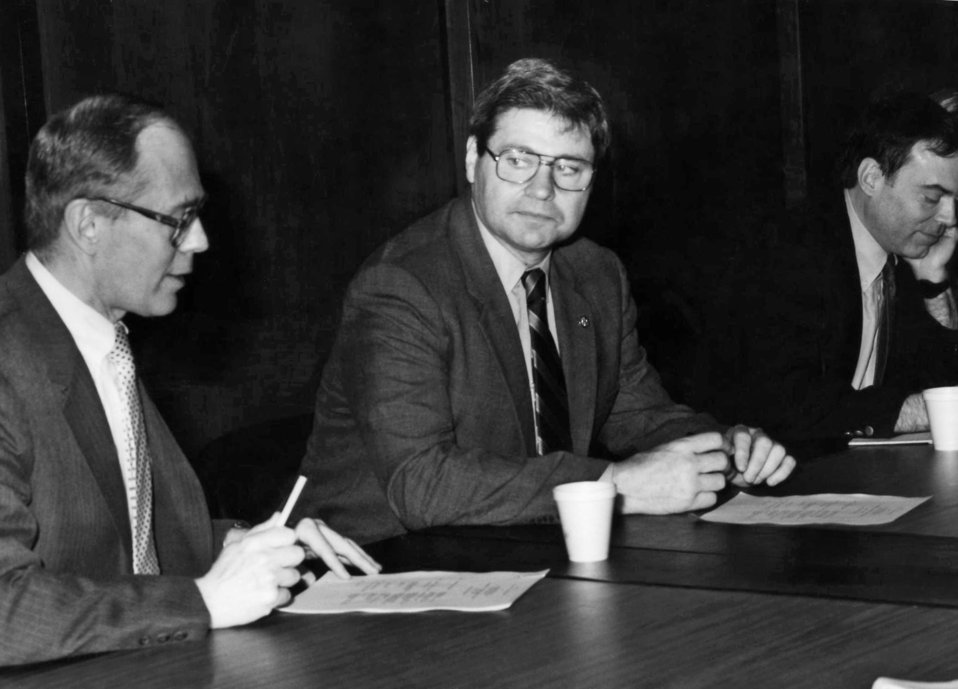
Dr. George Hardy (left) was shown sitting next to Georgia Congressional Representative, Ben Jones (D-GA), on the occasion of the Congressman's visit to the Centers for Disease Control in 1989.